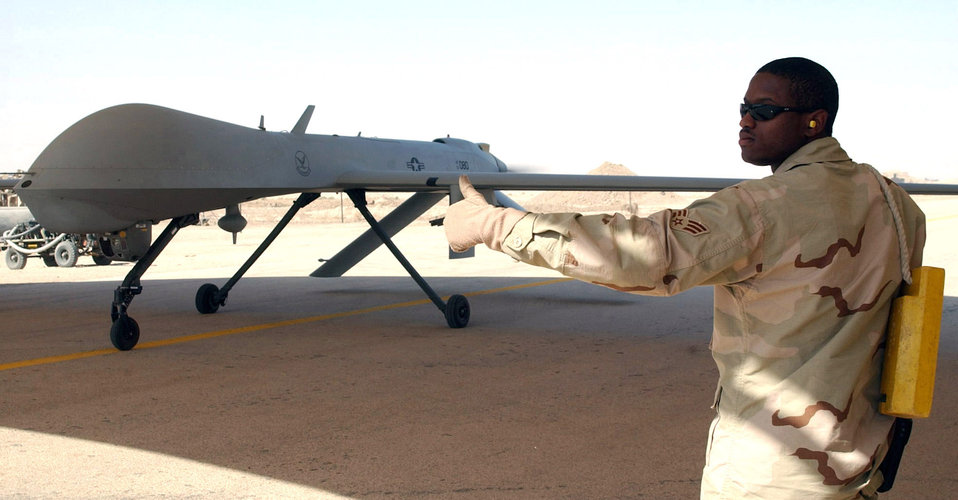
The director

TALLIL AIR BASE, Iraq (AFPN) -- Senior Airman Ray Campbell helps guide an MQ-1 Predator Unmanned Aerial Vehicle under a sun shade here after a mission July 21. Campbell is a crew chief deployed as part of the 332nd Air Expeditionary Wing supporting Operation Iraqi Freedom.